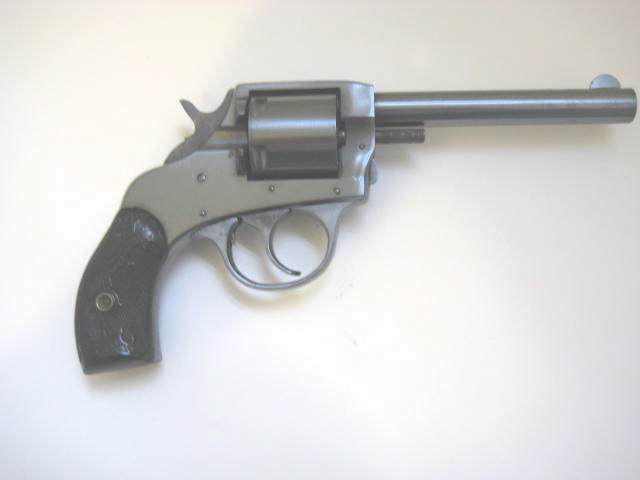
H&R Victor revolver